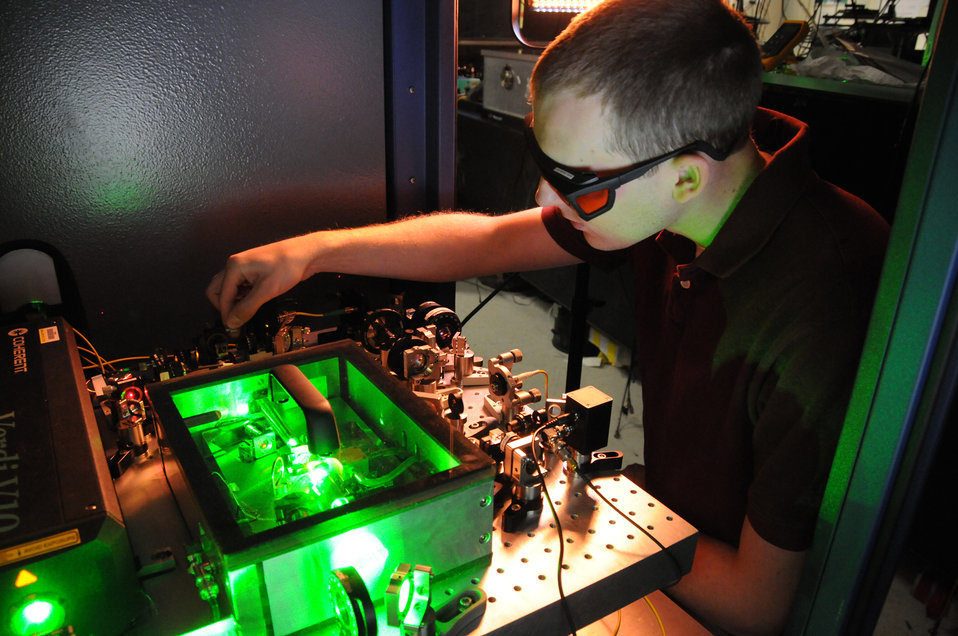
Microwave Generator

Matt Kirchner, a University of Colorado graduate student, fine-tunes an ultra-stable microwave generator that he helps operate at NIST.